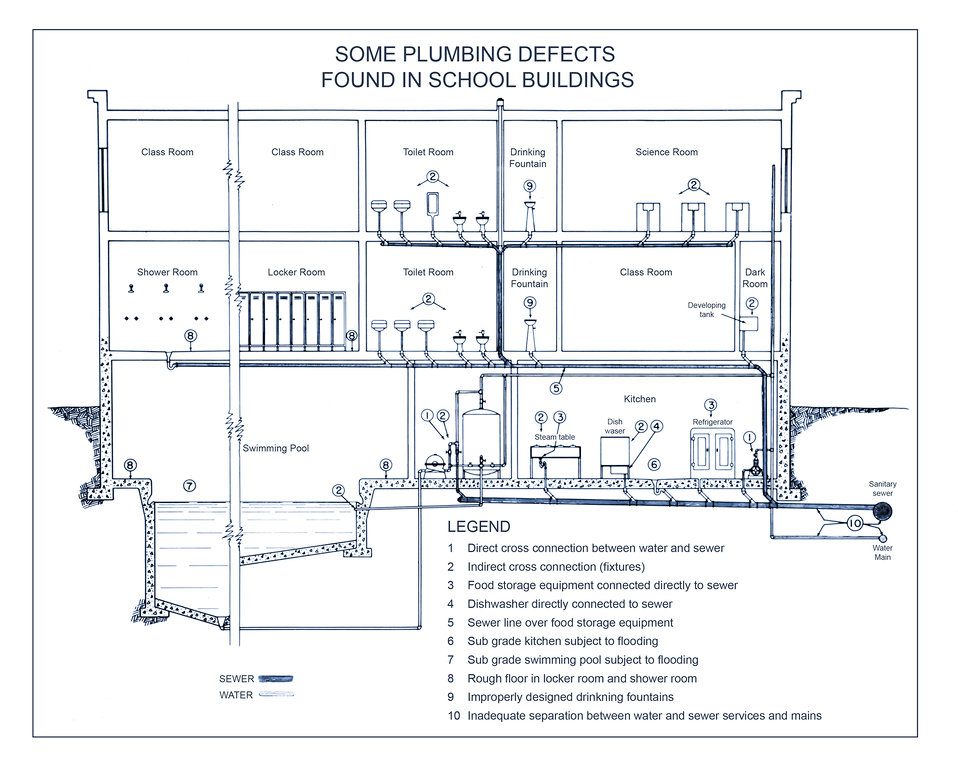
This historic 1942 diagram, which had been digitally enhanced and colorized, illustrated a cut-away view of a school building revealing common plumbing defects, which could contribute to the contamination of the school's potable water supply.